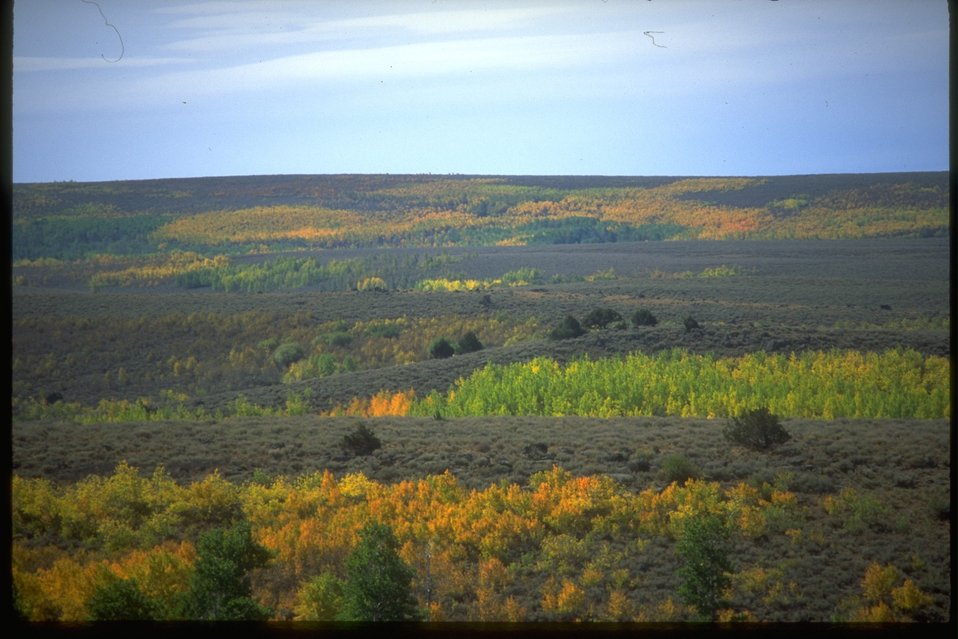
Steens Mountain series.